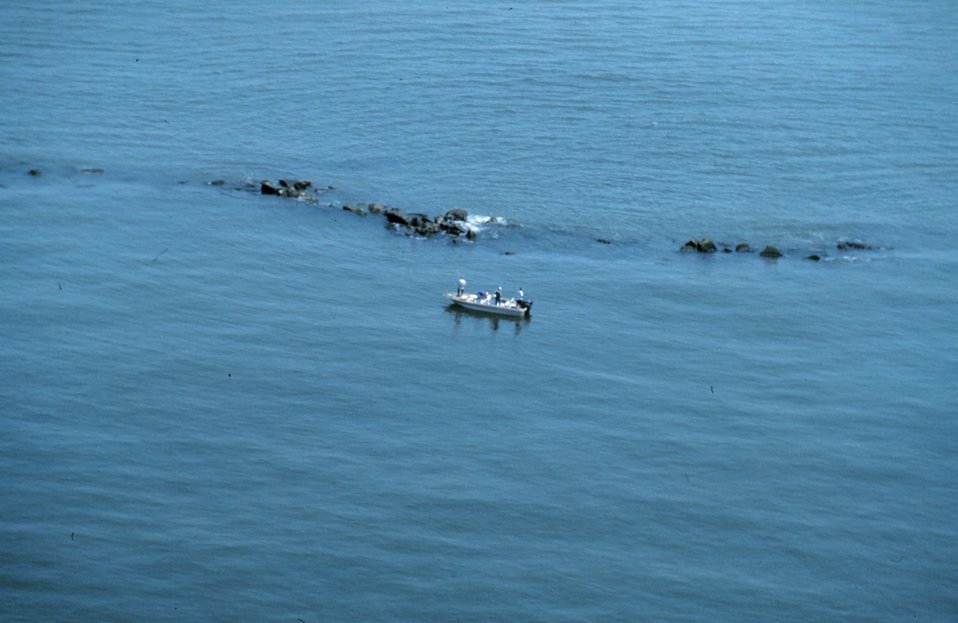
A part of the containment dike.